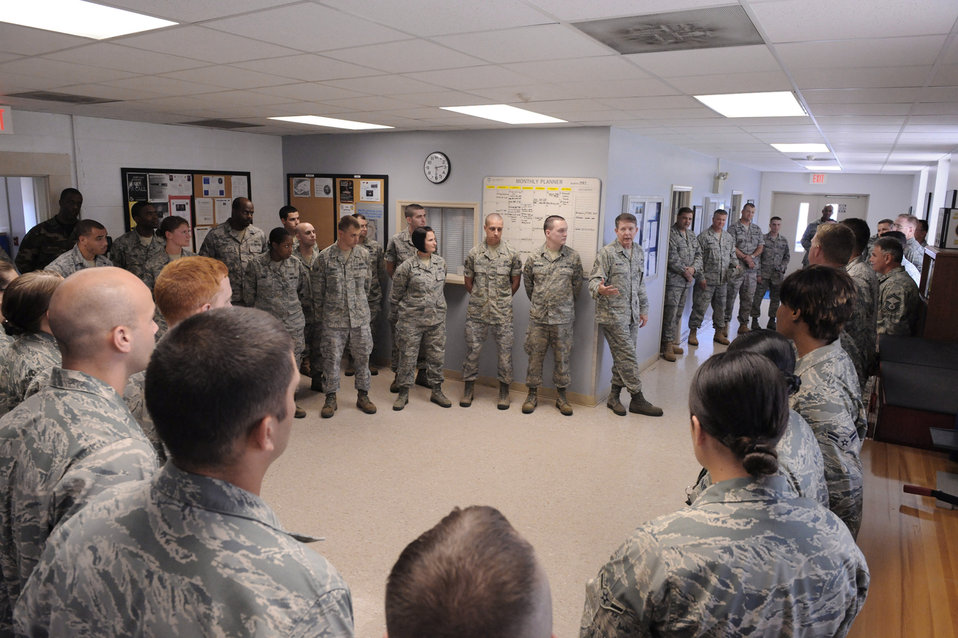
CMSAF visits Seymour Johnson

Chief Master Sgt. of the Air Force Rodney McKinley speaks to a group of Airmen in the aircrew flight equipment building on Seymour Johnson Air Force Base, June 12. As CMSAF, Chief McKinley represents the highest level of enlisted leadership for Airmen.